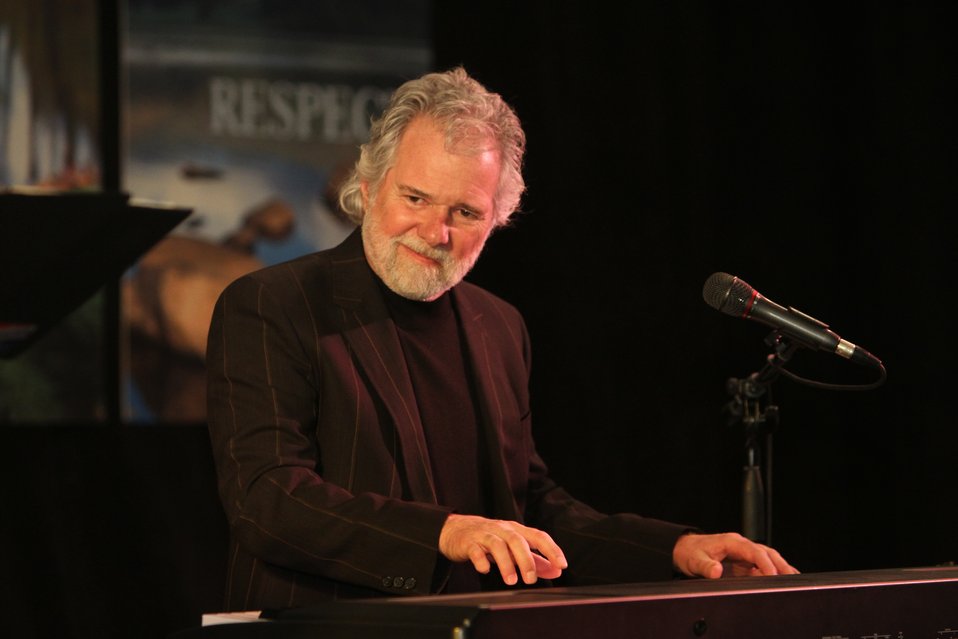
Chuck Leavell2

Legendary Rolling Stones keyboardist Chuck Leavell performs at the March 30 International Year of Forests 2011 event in Washington, D.C. where USDA Secretary Tom Vilsack announced USDA's three-step strategy to promote wood as a green building material.